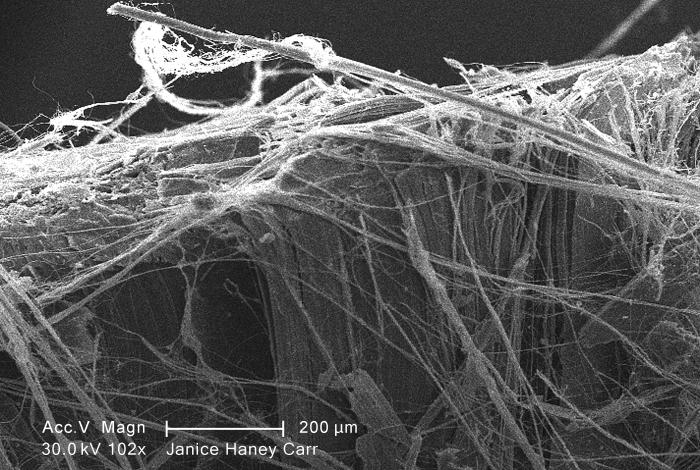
Under a moderate magnification of 102X, this scanning electron micrograph (SEM) revealed some of the microcrystalline ultrastructure exhibited by a piece of raw chrysotile, or white asbestos, which had been excavated from the Lowell Asbestos Mine on Belvidere Mountain, Vermont.